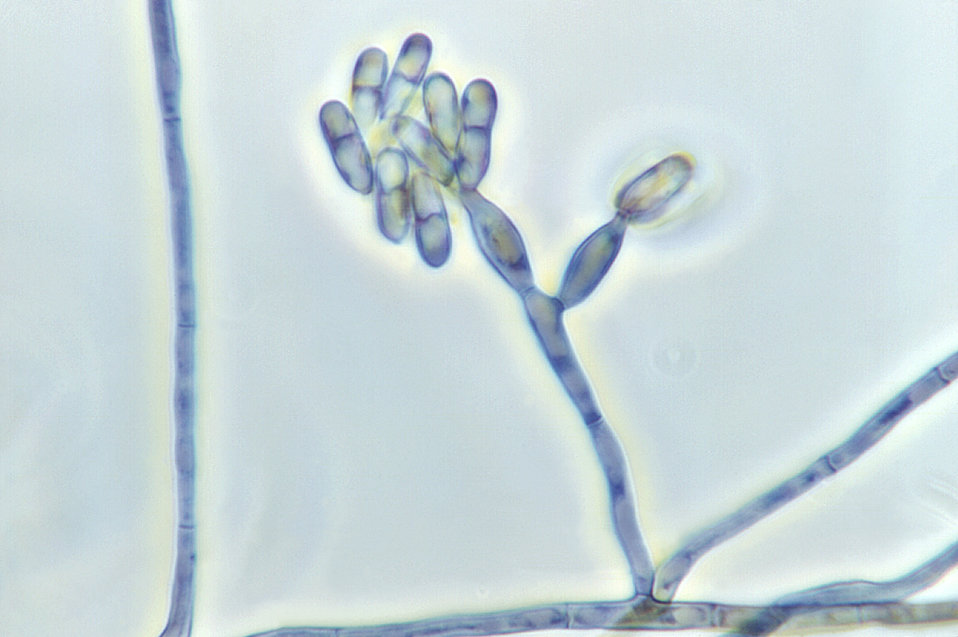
Magnified 1125X, this photomicrograph shows a conidia-laden condiophore of the fungus Exophiala salmonis.